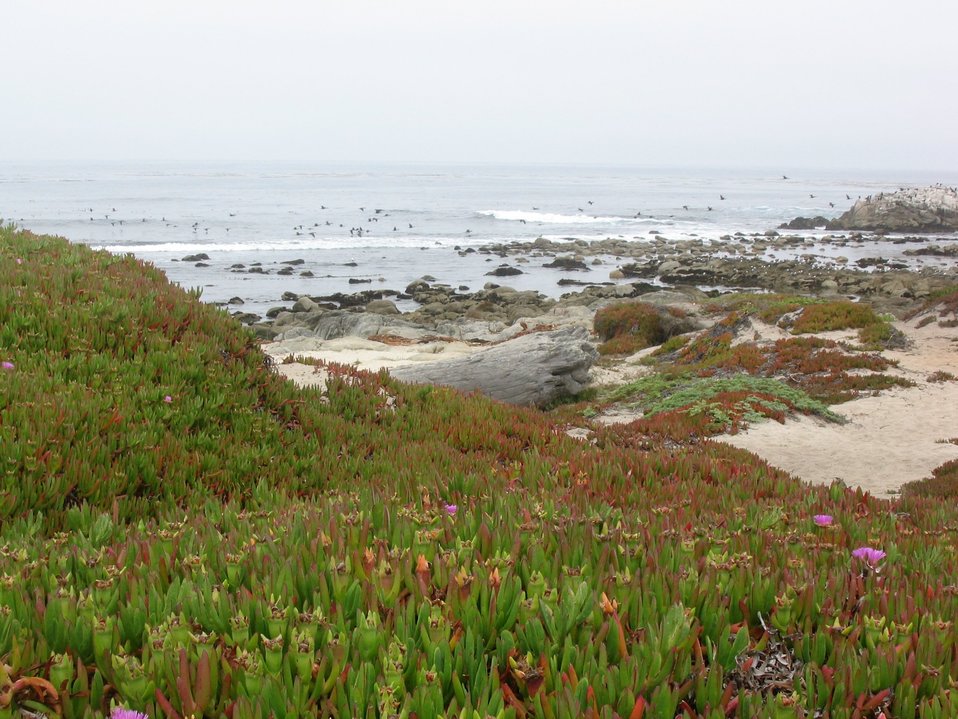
Iceplant (Carpobrotus edulis)